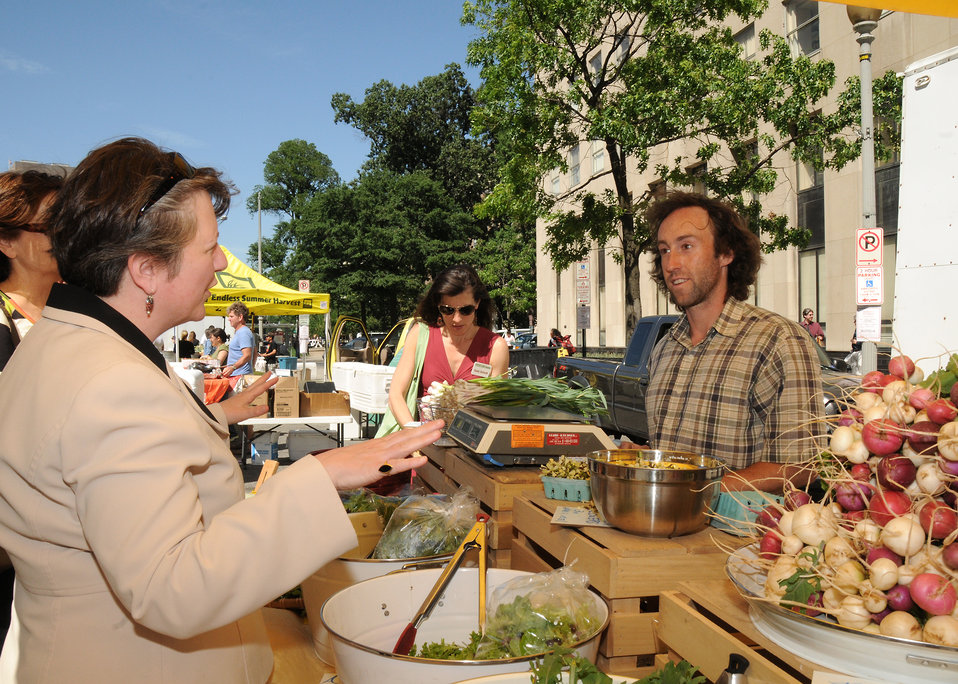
Agriculture Deputy Secretary Kathleen Merrigan wishes a vendor at the Freshfarm Market on Vermont Avenue in Washington, D. C., by the White House good luck on his sales on Thursday, May 6, 2010. This vendor recently applied for a loan from the Department of Agriculture. USDA photo 10di1348-193.